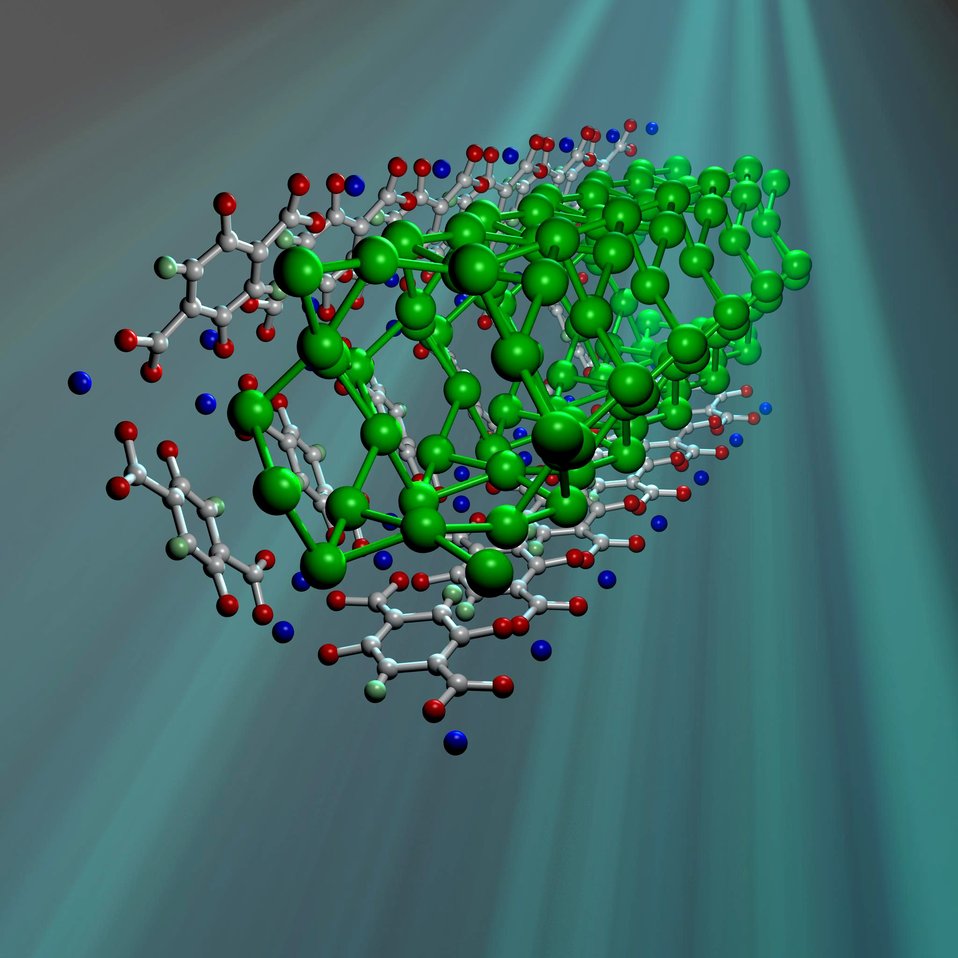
Hydrogen-Storage Compound

MOF-74 resembles a series of tightly packed straws comprised mostly of carbon atoms (white balls) with columns of zinc ions (blue balls) running down the walls. Heavy hydrogen molecules (green balls) adsorbed in MOF-74 pack into the tubes more densely than they would in solid form.